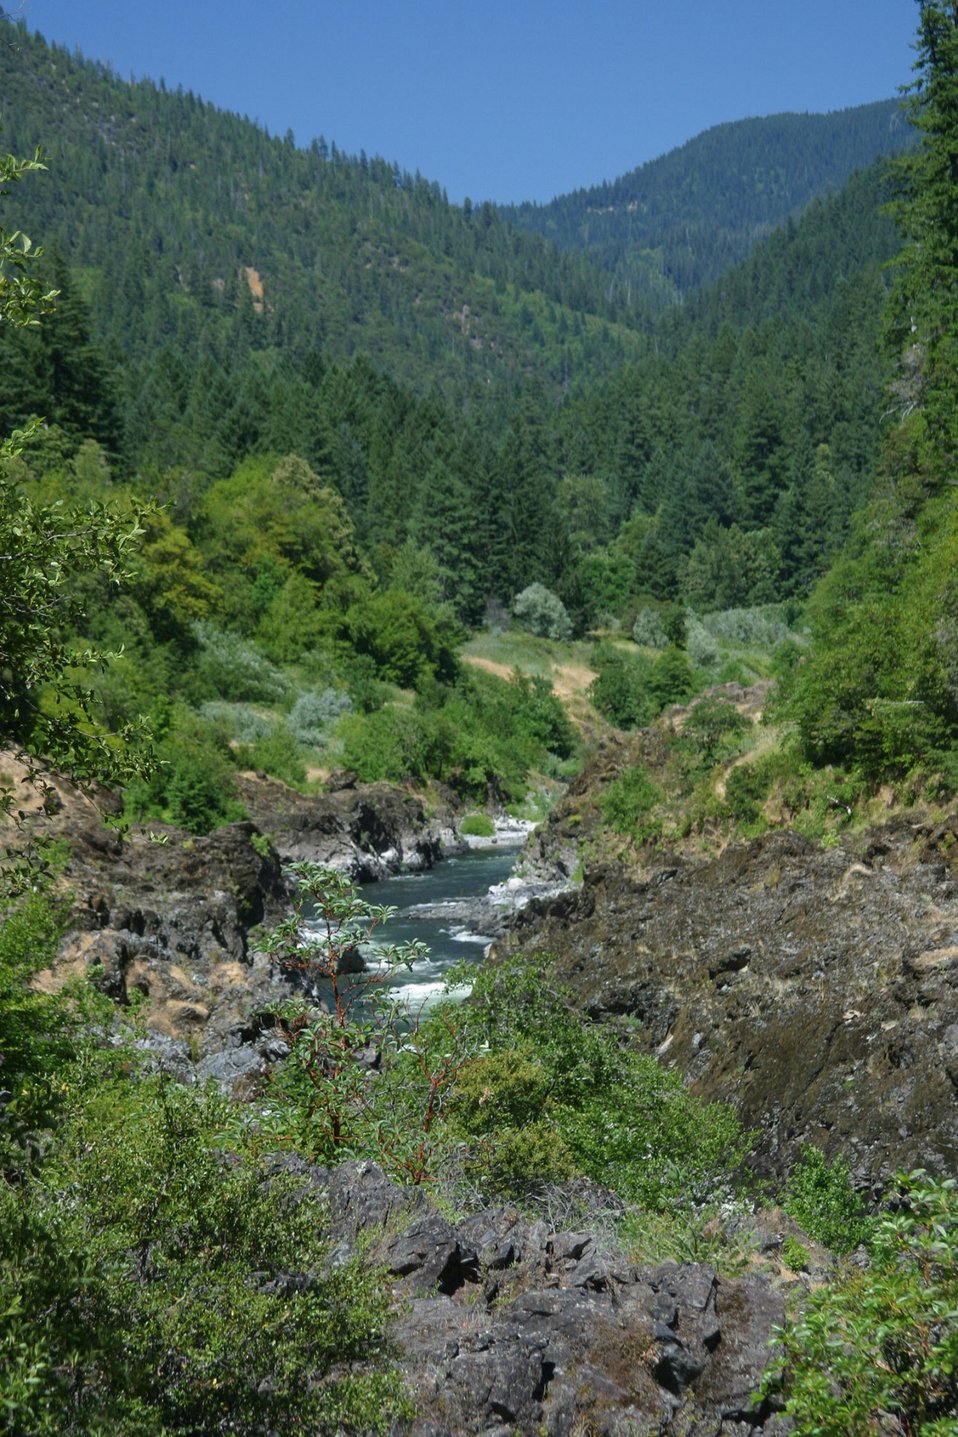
View looking down river from Rainie Falls Trail.